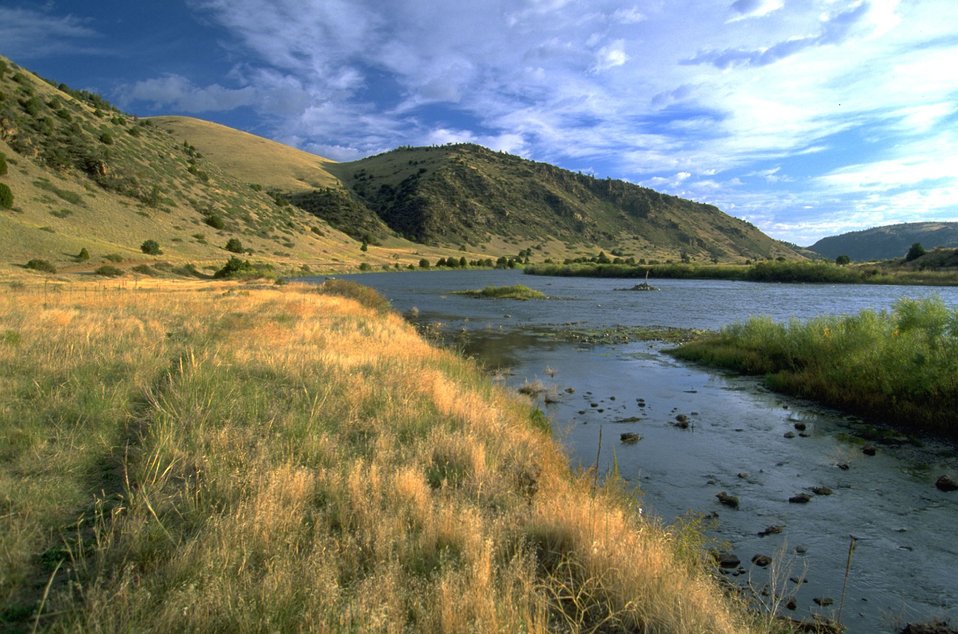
Grassy Bank next to the lower Madison River